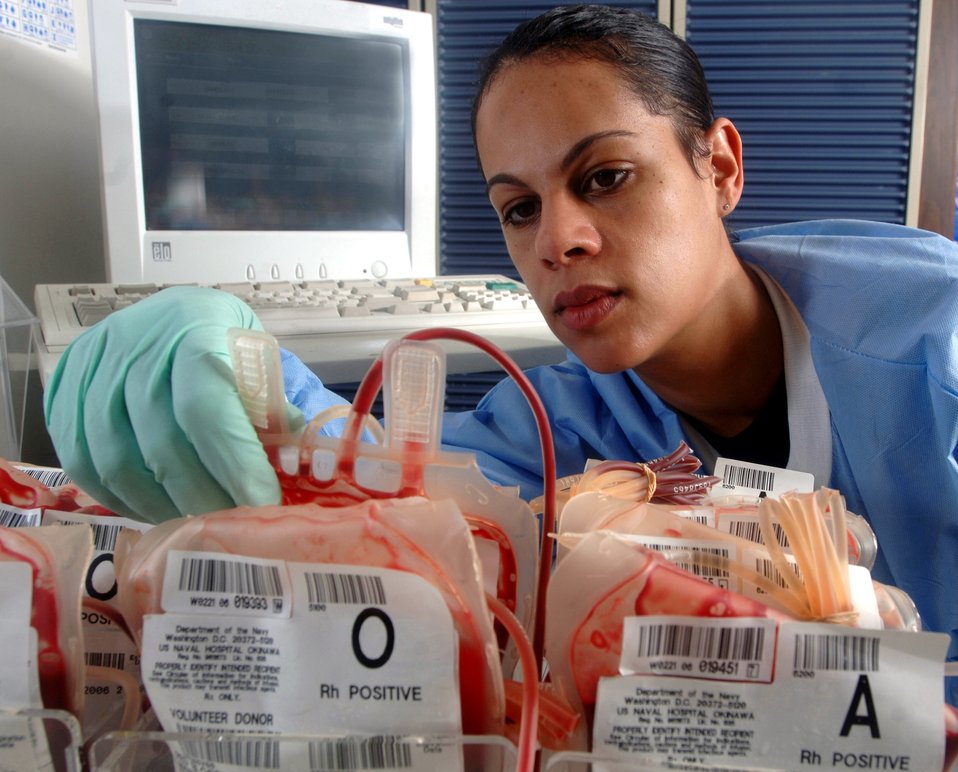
Medical lab techs

Tech. Sgt. Leyla Gillett checks units of blood for clots, leaks and broken segments during a daily inspection at Yokota Air Base, Japan, on Thursday, May 11, 2006. Sergeant Gillett is a medical laboratory technician with the 374th Medical Group. Her laboratory conducts more than 48,000 tests annually.